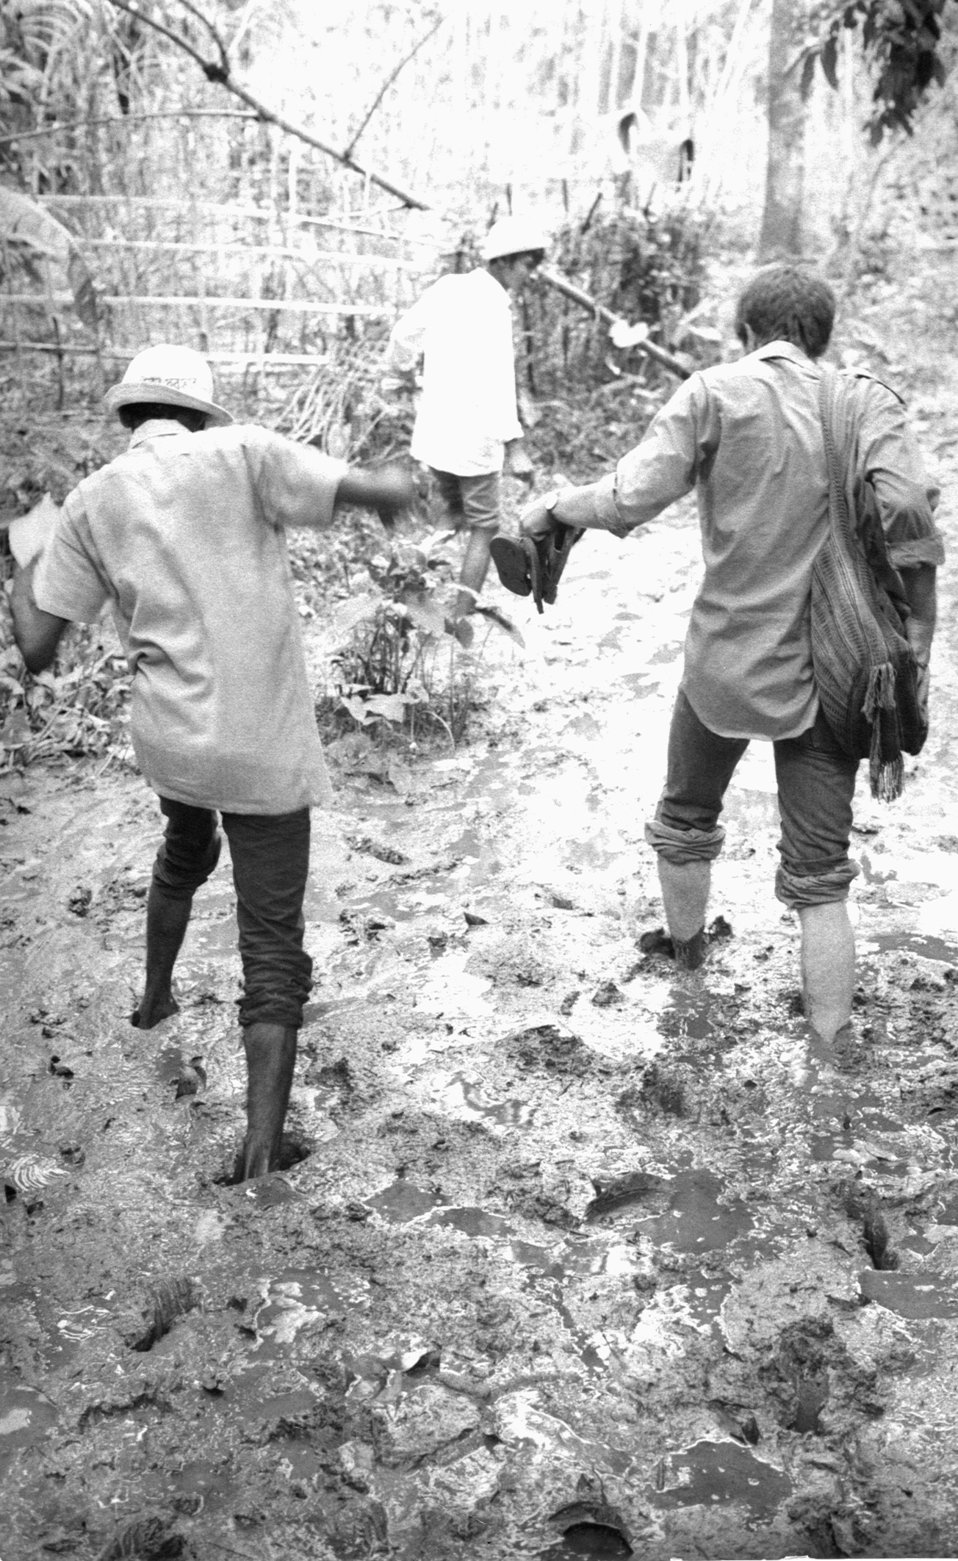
These two smallpox eradication team members had to walk through the mud during their house to house search, for any remaining cases of smallpox in this Bangladesh village. Given that the post-rainy season offered the best opportunity to find, and stop the last cases of smallpox, walking through the mud was common. The mud was at times a nuisance, for it would suck off ones shoes, so most workers went barefoot in their quest.